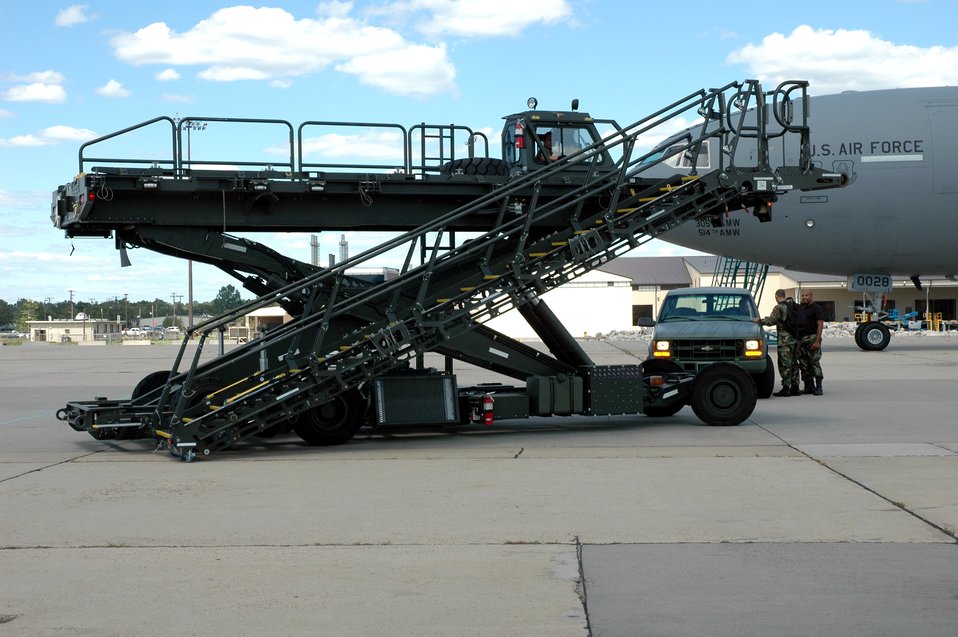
Air Mobility Battlelab combines cargo, passenger loaders

An example of the Halvorson Air Stairs Kit, or HASK, modified cargo loader moves on the flightline at McGuire Air Force Base, N.J., in 2006 during a demonstration of the modified cargo/personnel aircraft loader. The development of the HASK cargo loader came from the Air Mobility Warfare Center's Air Mobility Battlelab.